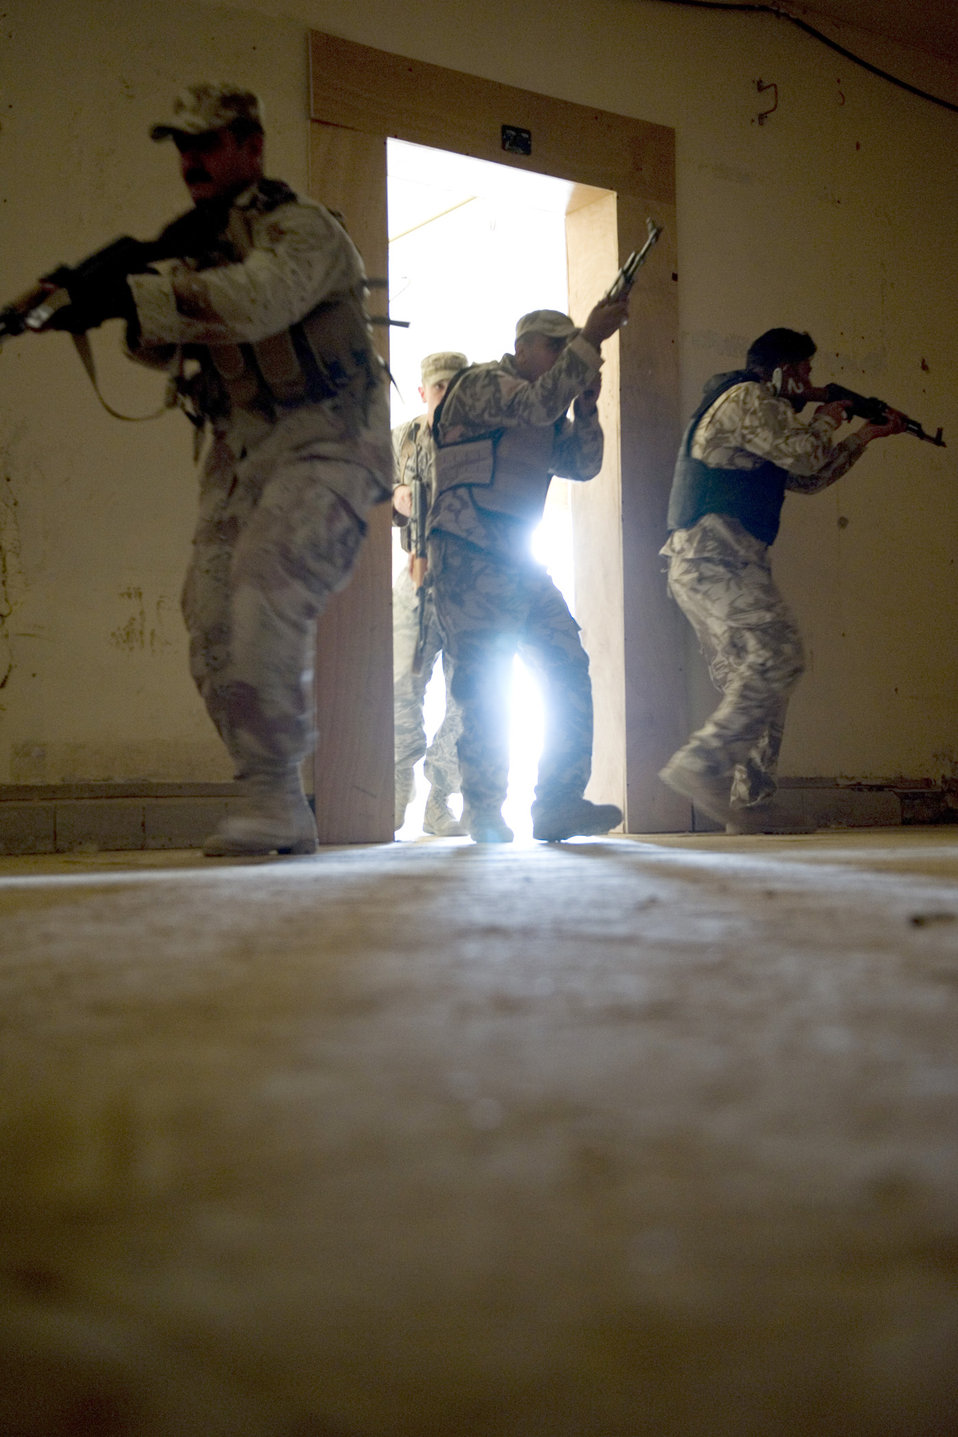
Sather Airmen take Iraqi security training to next level

Iraqi security forces members storm a room during advanced security forces training May 23, 2011, at Sather Air Base, Iraq. Air Force trainers with the 447th Expeditionary Security Forces Squadron taught Iraqi service members advanced security forces tactics to prepare them for personal security detail training.